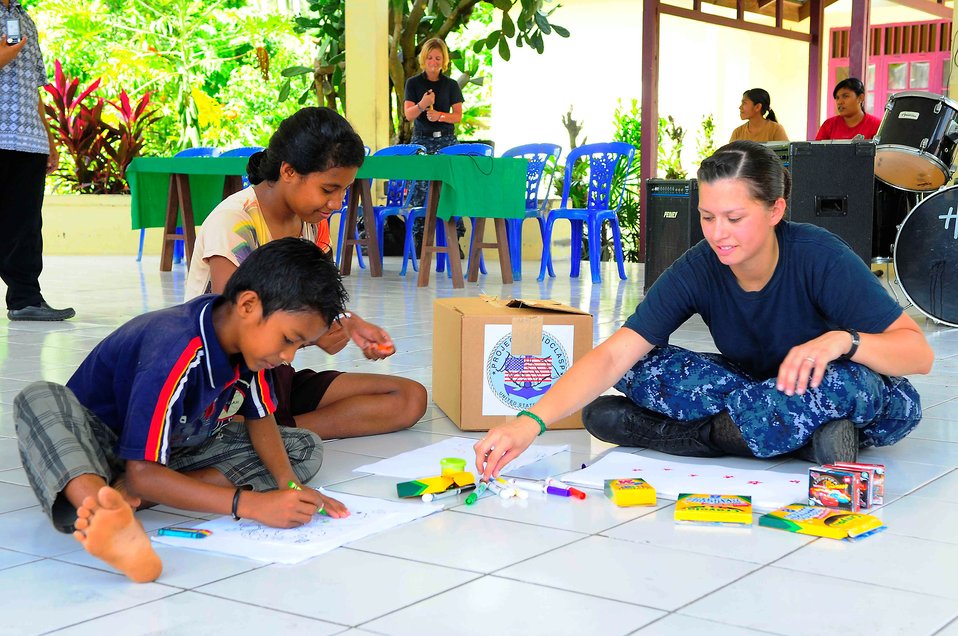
Hospital Corpsman 2nd Class Reese Overturf Colors With Two Indonesian Children

Hospital Corpsman 2nd Class Reese Overturf, currently embarked aboard the Military Sealift Command hospital ship USNS Mercy (T-AH 19), colors with two children during a community service event at the Rumah Sejahtera Bagi Anak Orphanage, in support of Pacific Partnership 2010 in Tobelo, Indonesia, on July 14, 2010. Pacific Partnership 2010 is the fifth in a series of annual U.S. Pacific Fleet endeavors conducted in Indonesia as a disaster relief exercise to strengthen regional partnerships.